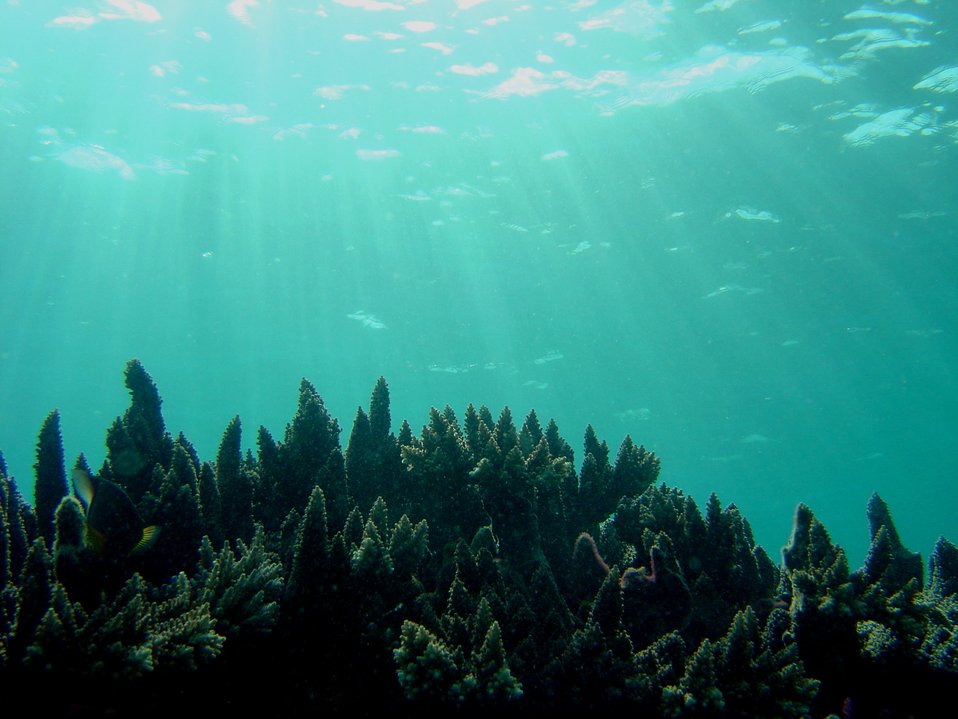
Reef scene